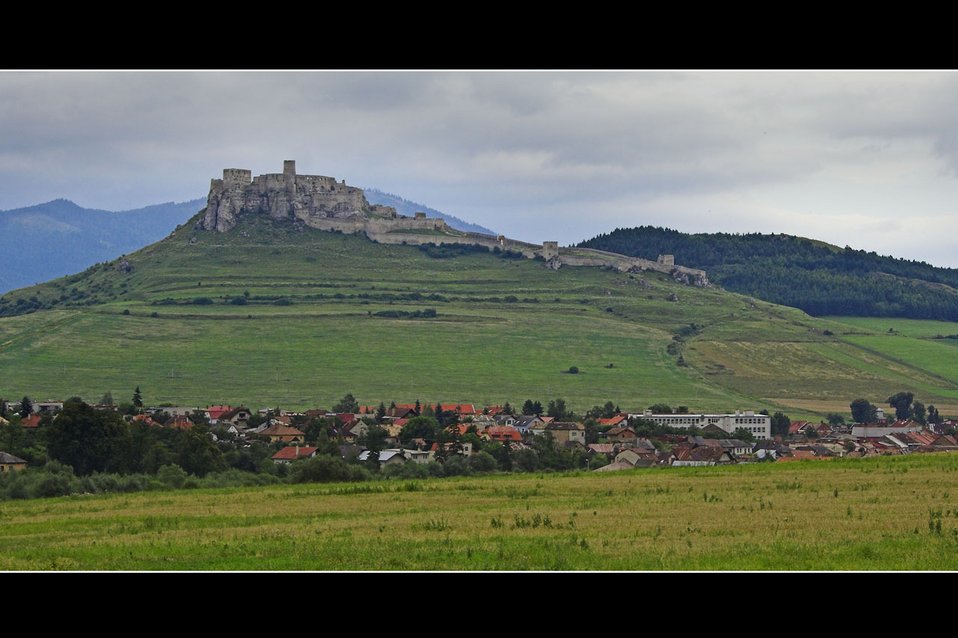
Spis castle

The spis castle, the largest castle of central europe.